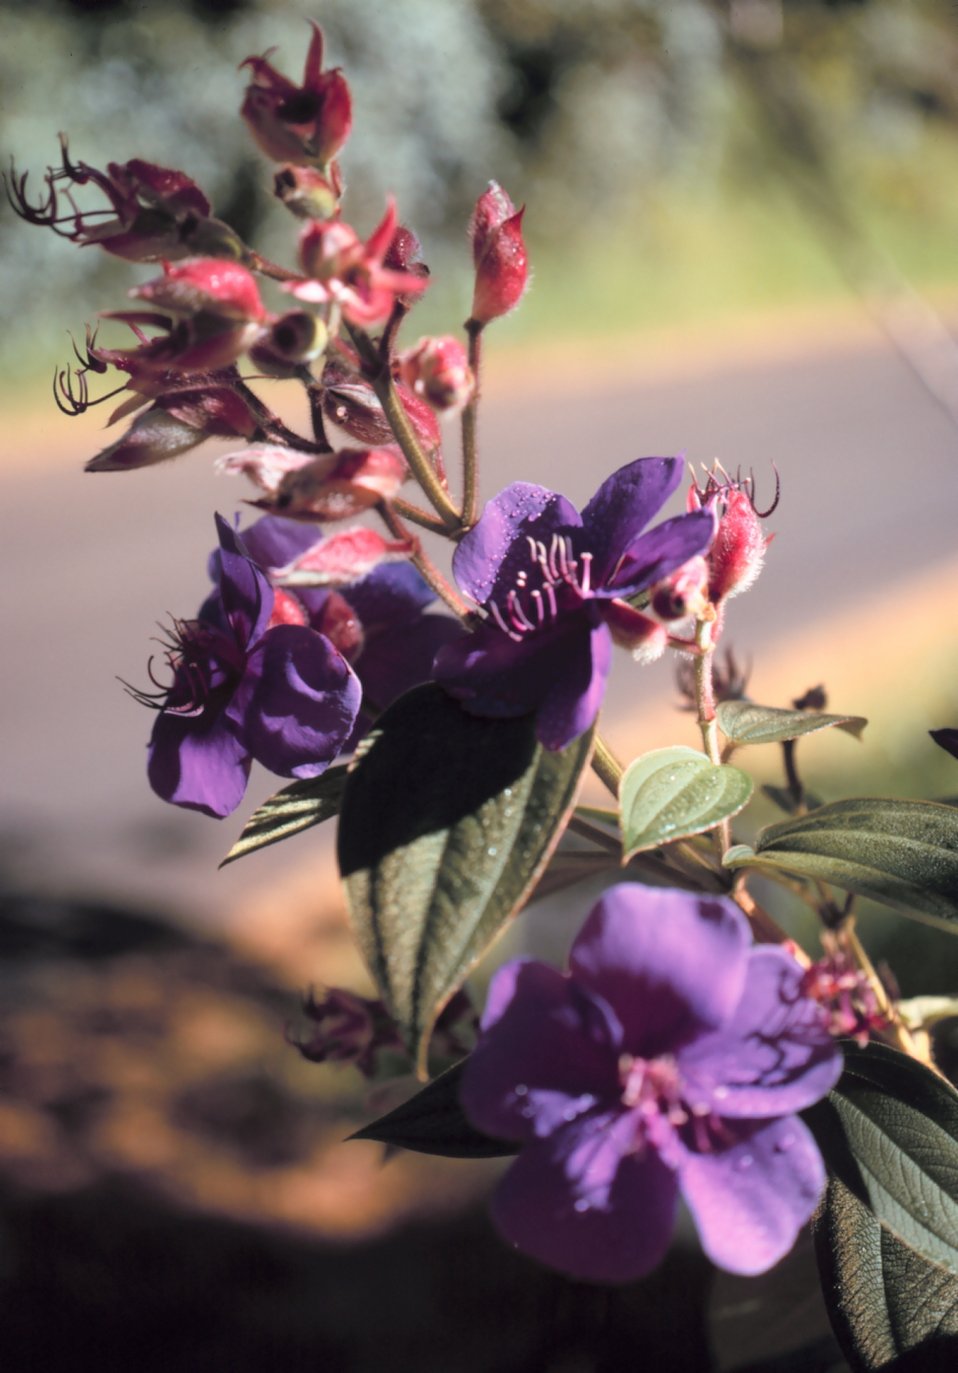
Purple flowers and red flowers